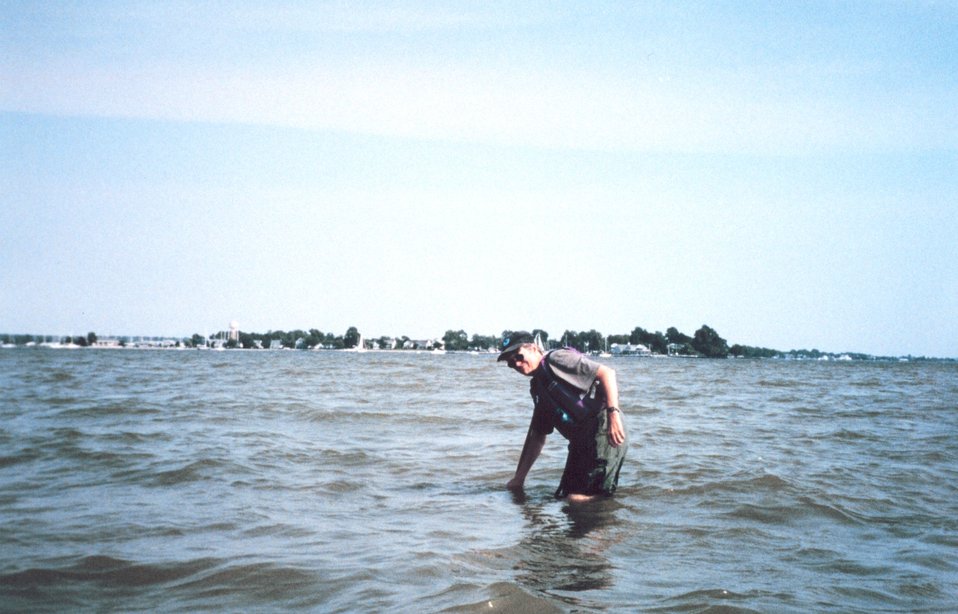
Searching for submerged aquatic vegetation (SAV's) in the Tred Avon River. Part of an annual Bay-wide ground-truthing effort.